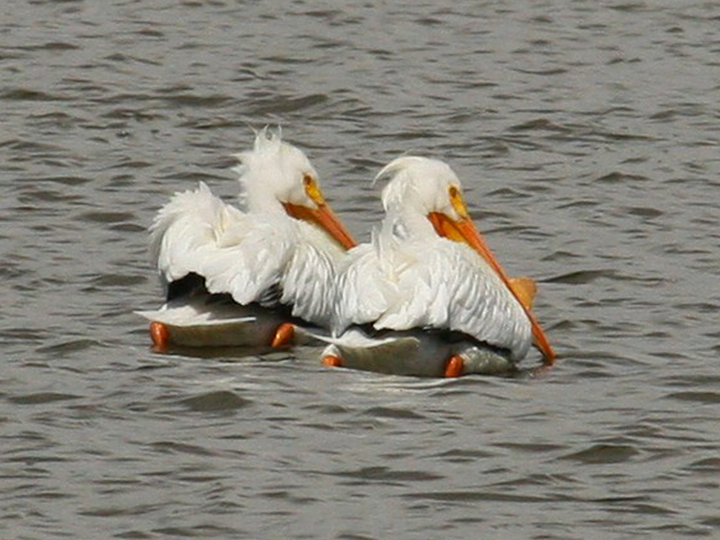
A Pelican Duo

The lands of the refuge were established to protect and provide habitat for migratory birds that cross State lines and international borders and are by law a Federal trust responsibility.

The refuge is of great value to waterfowl and shorebirds, as well as other migrating water-dependent bird species, because of the diversity of wetland and upland habitats that provide for the diverse life cycle needs of these species.